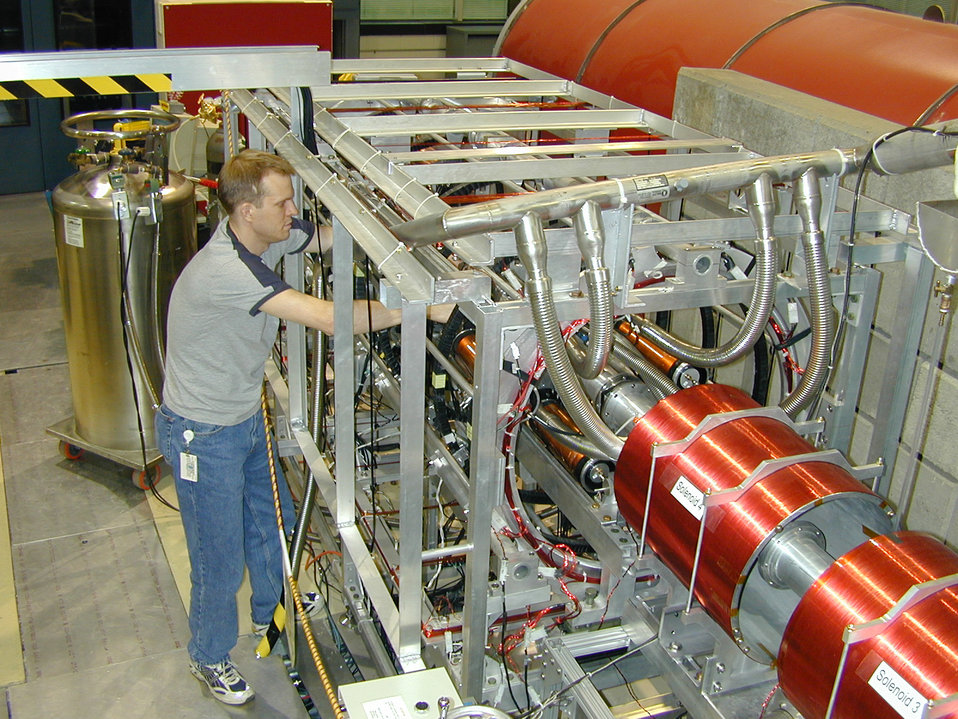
Physicist Pieter Mumm

Physicists including Pieter Mumm (shown) used the emiT detector they built at NIST to investigate any potential statistical imbalance between the two natural types of neutron decay.

See also www.nist.gov/ncnr/antimatter-110811.cfm

Credit: emiT team